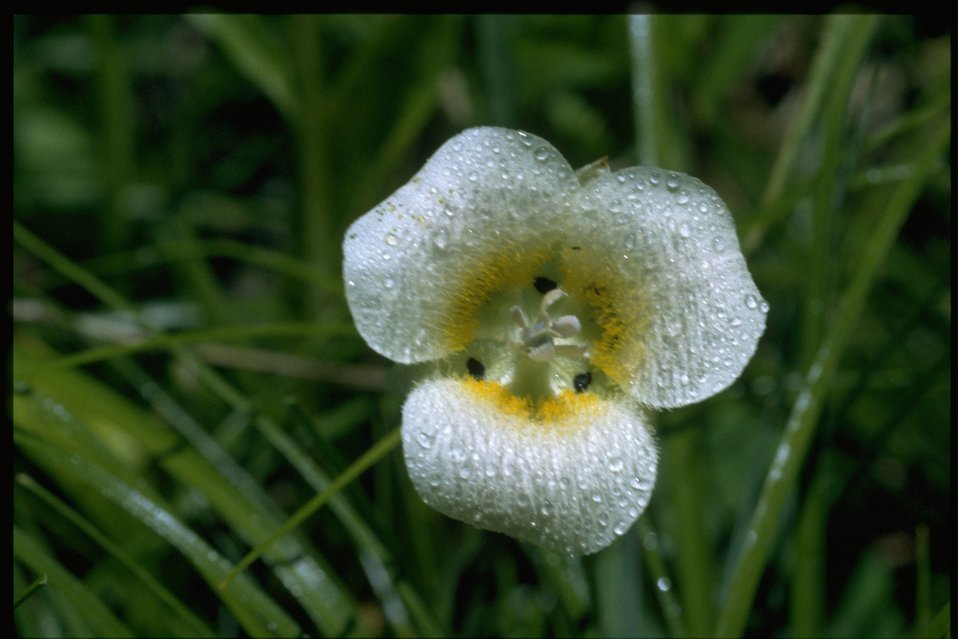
Closeup shot of Calochortus subalpinus.